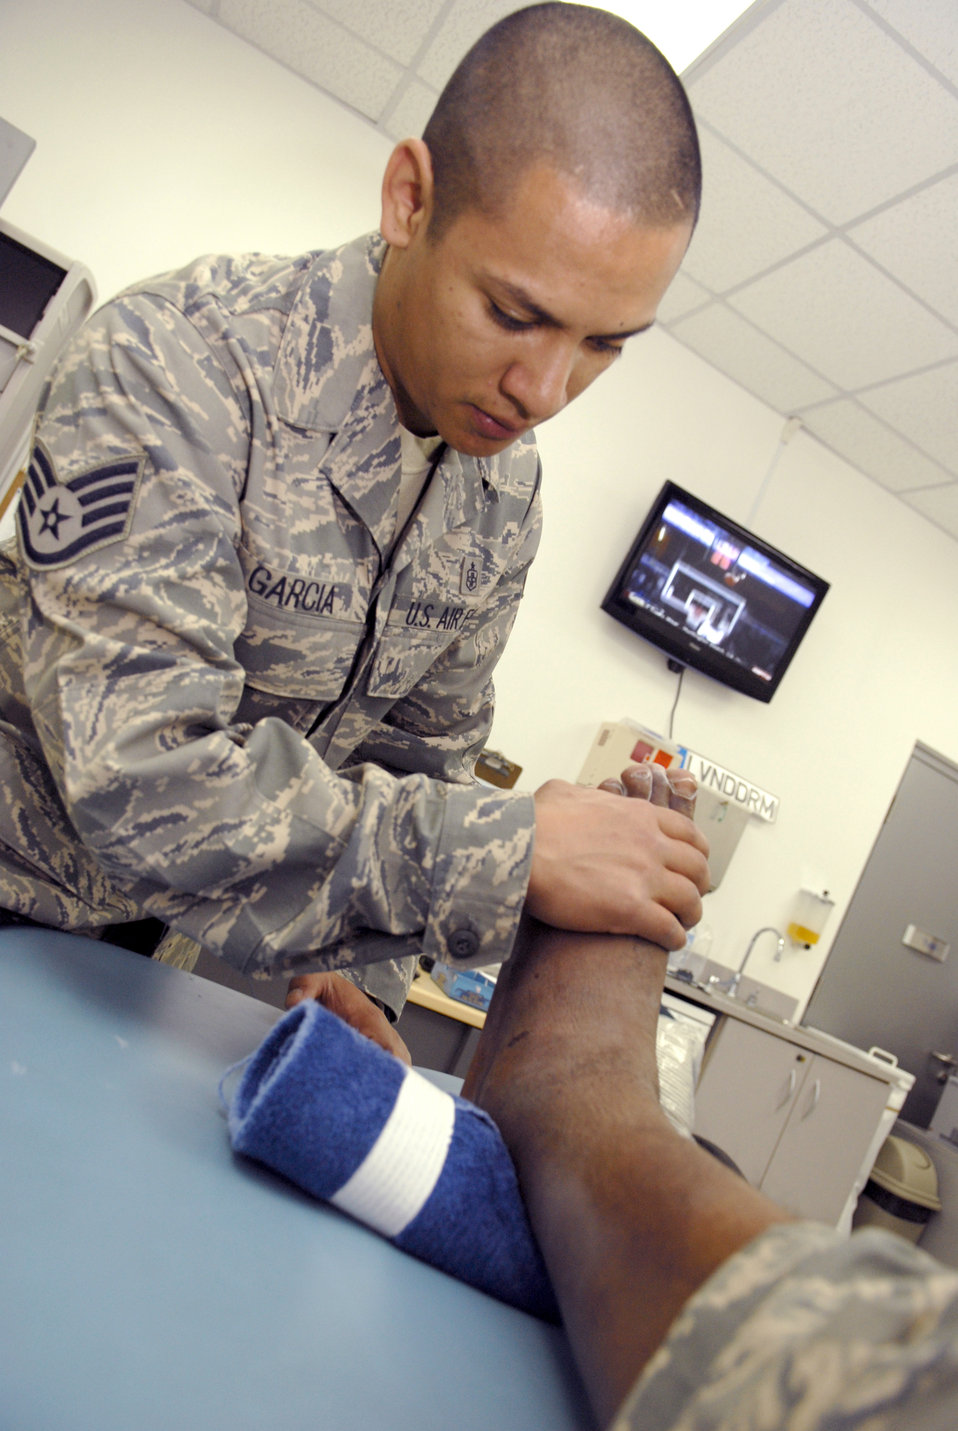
Physical therapy keeps Airmen fit to fight

Staff Sgt. David Garcia, the 379th Expeditionary Medical Group NCOIC of the physical therapy clinic at an air base in Southwest Asia, performs isometric muscle strengthening Feb. 19 on a patient who sprained his ankle. The physical therapists concentrate on injuries involving ankles, knees, hips, back and neck and work to get warfighters back on the job as soon as safely possible. They also travel around the base talking to individuals and groups about ways to prevent injuries. Sergeant Garcia is deployed from Andrews Air Force Base, Md.